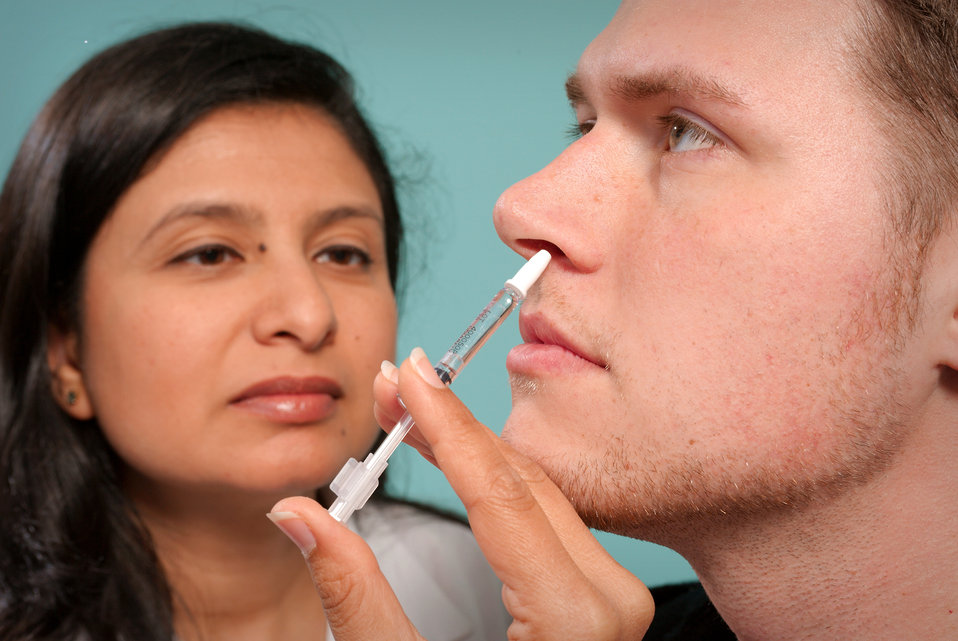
This 2009 image depicts a healthcare practitioner as she was administering the H1N1 live attenuated intranasal vaccine (LAIV) to a male recipient. Using a small syringe, she was delivering the vaccine mist into the man's left nostril.